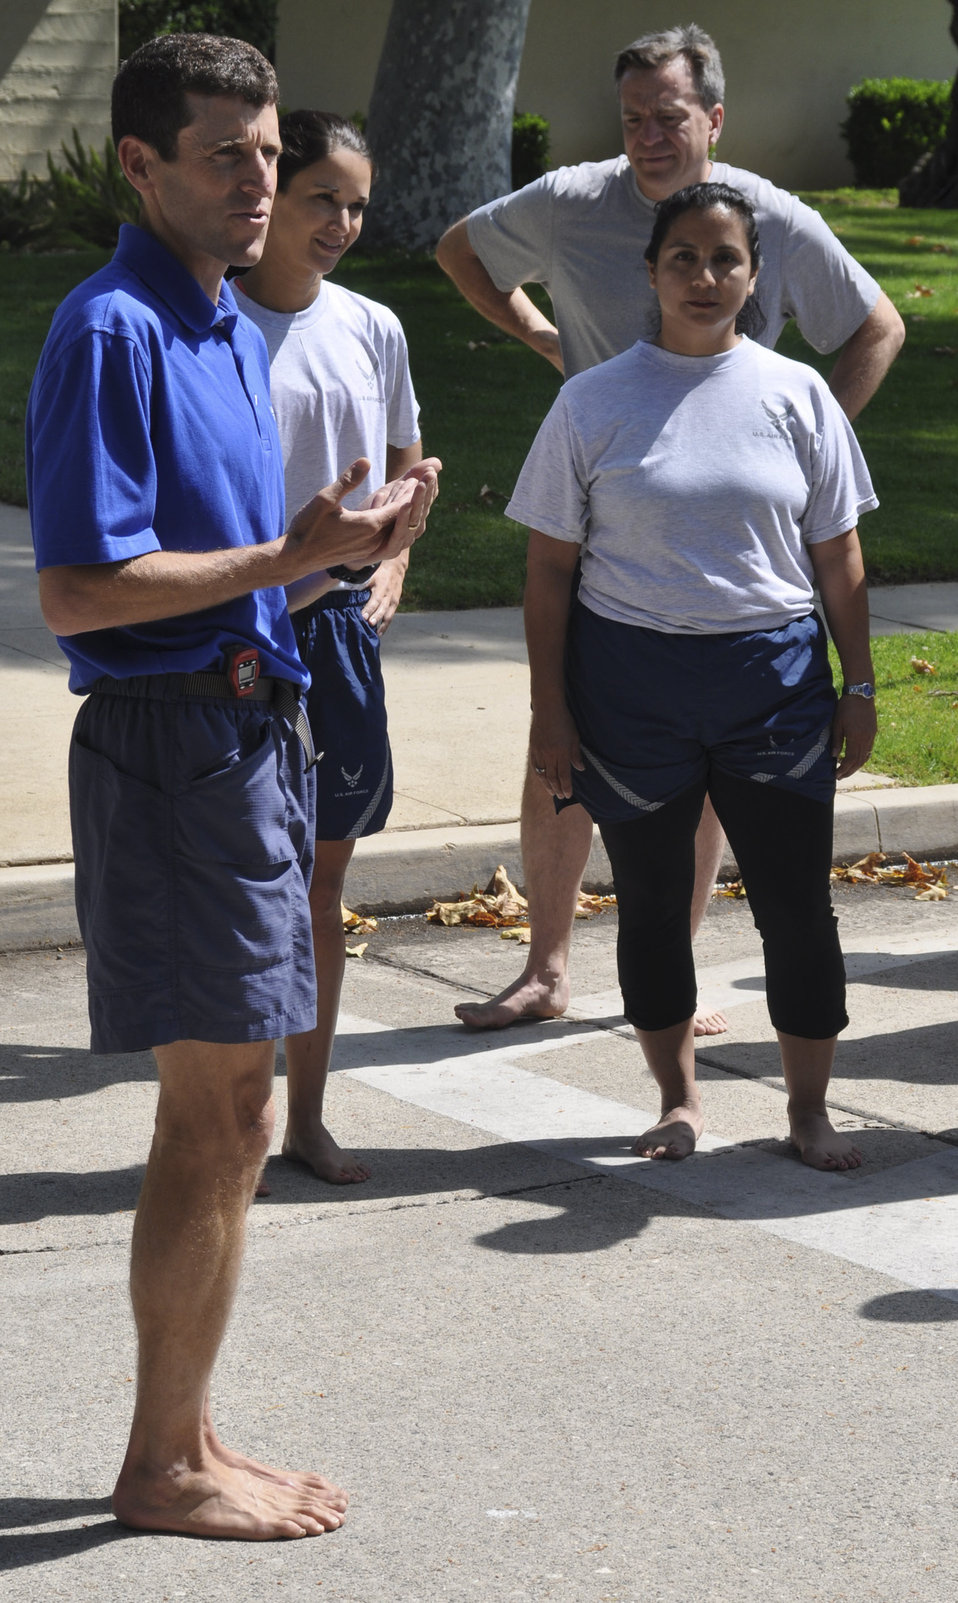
March FITT running program

Dr. Mark Cucuzzella speaks to runners during a running clinic June 12, 2011, at March Air Reserve Base, Calif. The clinic was a joint effort between the 452nd Air Mobility Wing and the March Fitness and Ispiration Through Teamwork organization.